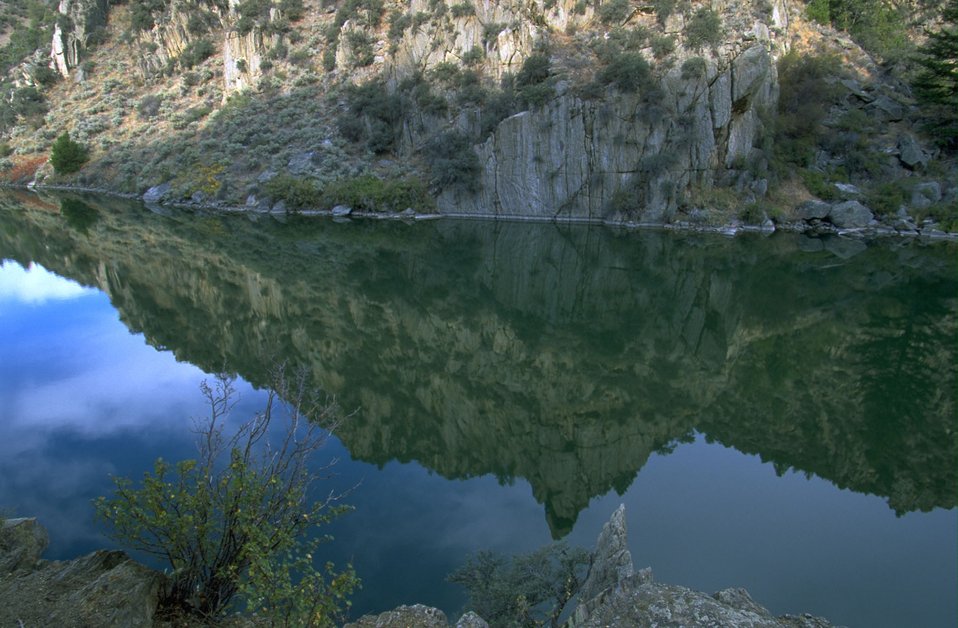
Reflection of sky on water